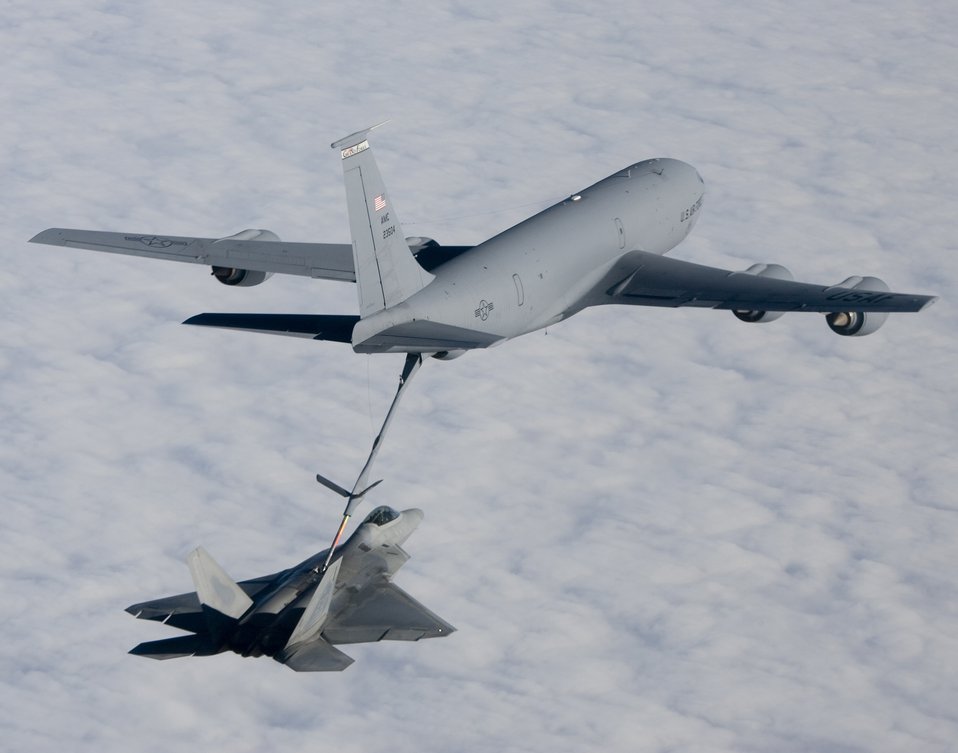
Gas and go

A KC-135 Stratotanker from Grand Forks Air Force Base N.D., refuels an F-22 Raptor from Edwards AFB, Calif. Jan. 18. A refueling team from Grand Forks will be the lead tanker unit at an upcoming Red Flag exercise.